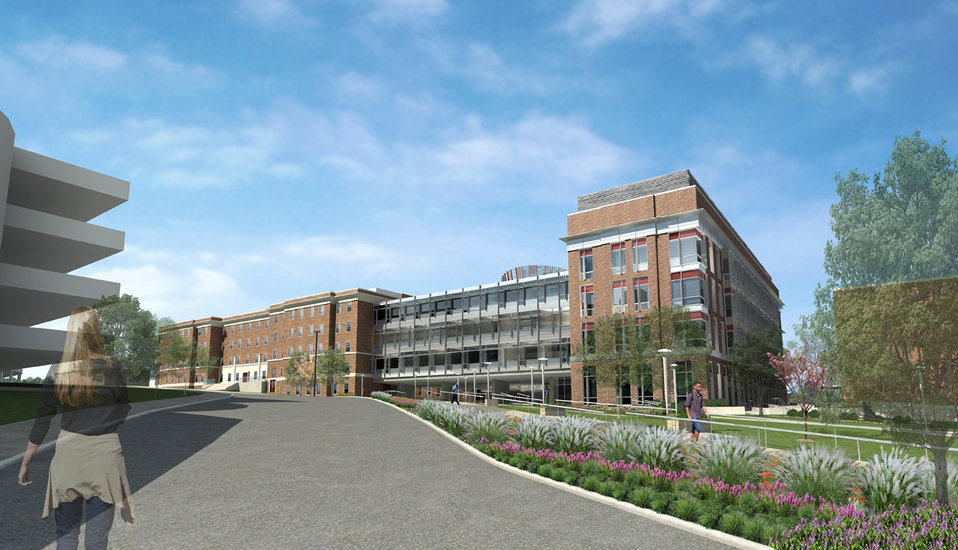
Recovery Act Grant; University of Maryland

View of the new Physical Sciences Complex at the University of Maryland College Park, which will house the basement laboratories of the Laboratory for Advanced Quantum Science.